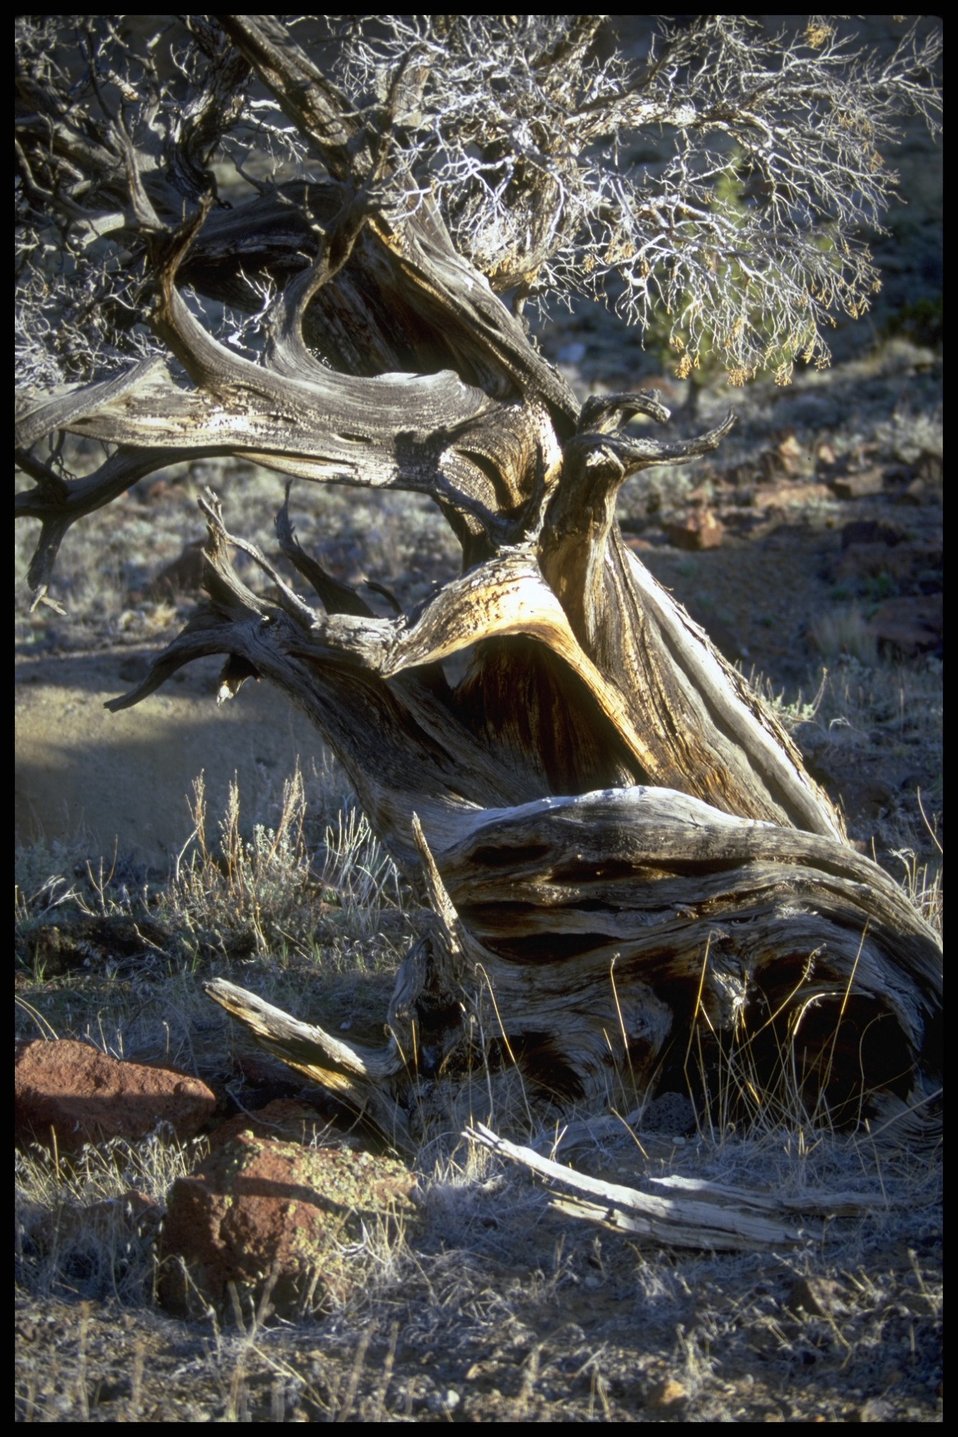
Lakeview District. Old Juniper tree.